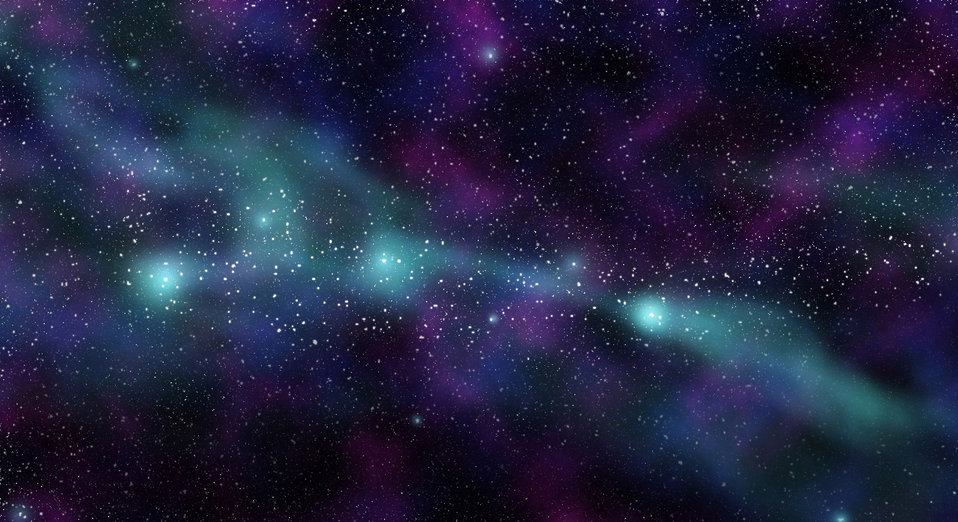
Space

Representative picture of outer space.